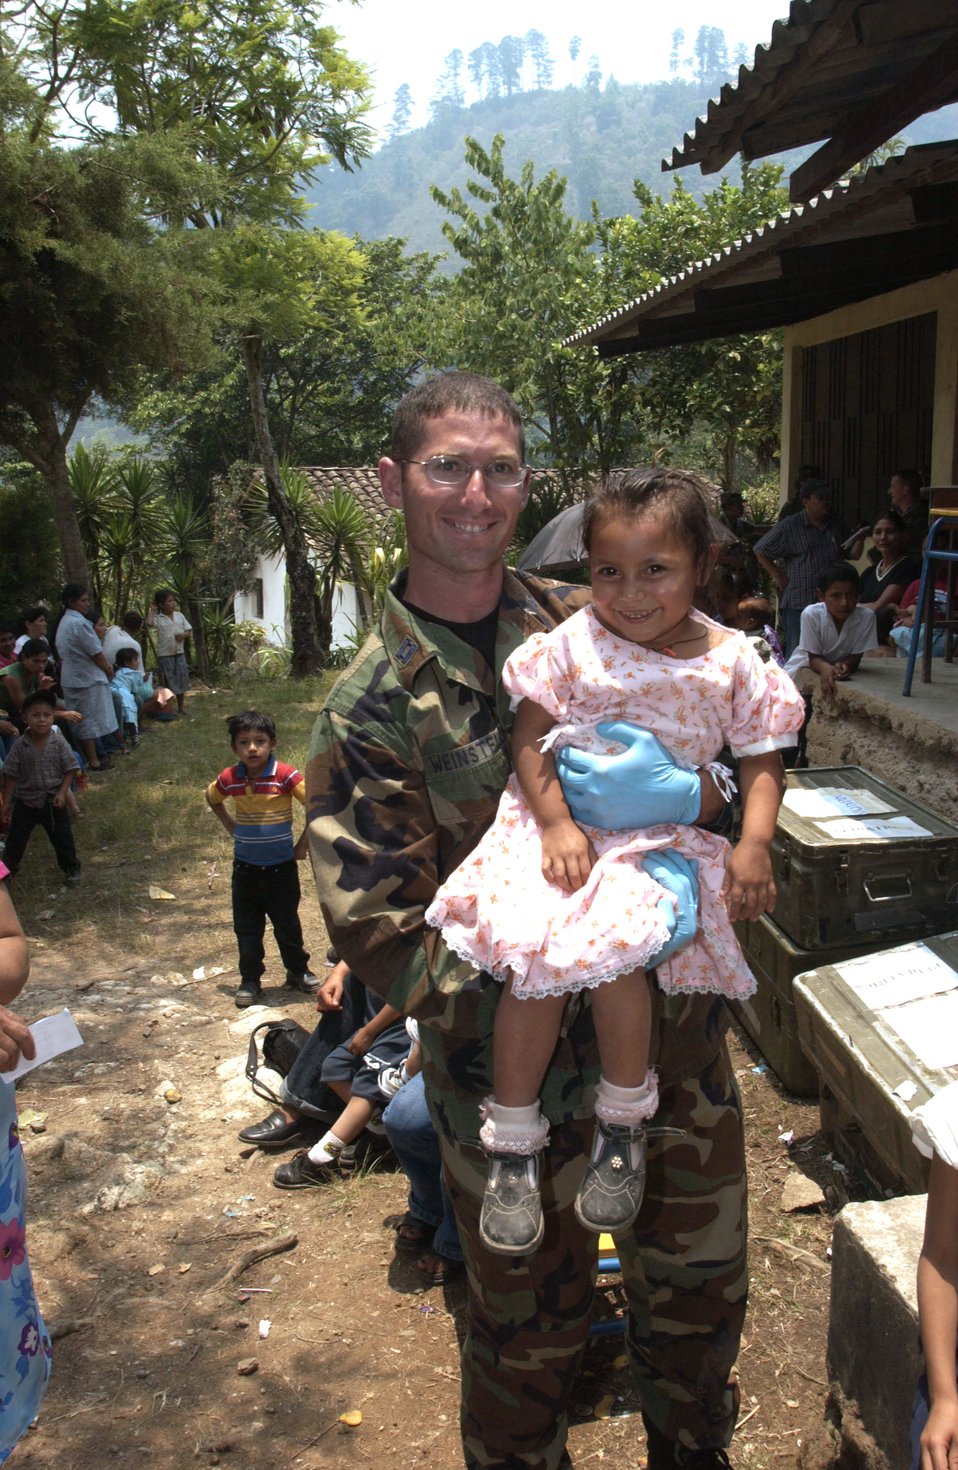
Medics provide human touch

RAUTECA, Honduras -- Capt. James Weinstein holds 4-year-old Curi Anayella after an examination. The captain is part of an 18-person medical readiness exercise team providing medical aid to people here. Captain Weinstein is a dietician from the 60th Medical Group at Travis Air Force Base, Calif.